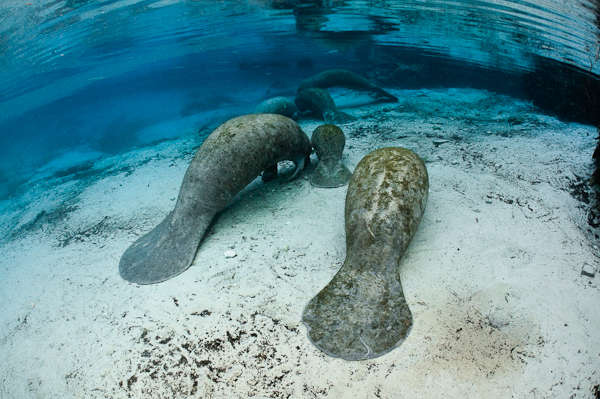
Endangered Florida manatee (Trichechus manatus)

Photo credit: Carol Grant

The Crystal River National Wildlife Refuge, was established in 1983 specifically for the protection of the endangered West Indian Manatee. This unique refuge preserves the last unspoiled and undeveloped habitat in Kings Bay, which forms the headwaters of the Crystal River. The refuge preserves the warm water spring havens, which provide critical habitat for the manatee populations that migrate here each winter.